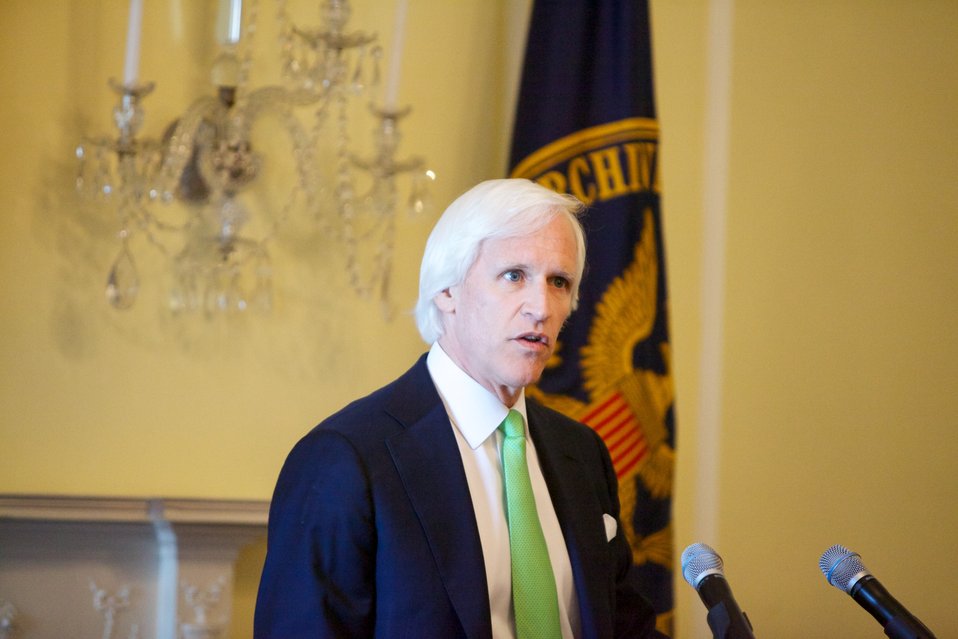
Hitler Album Donation Event